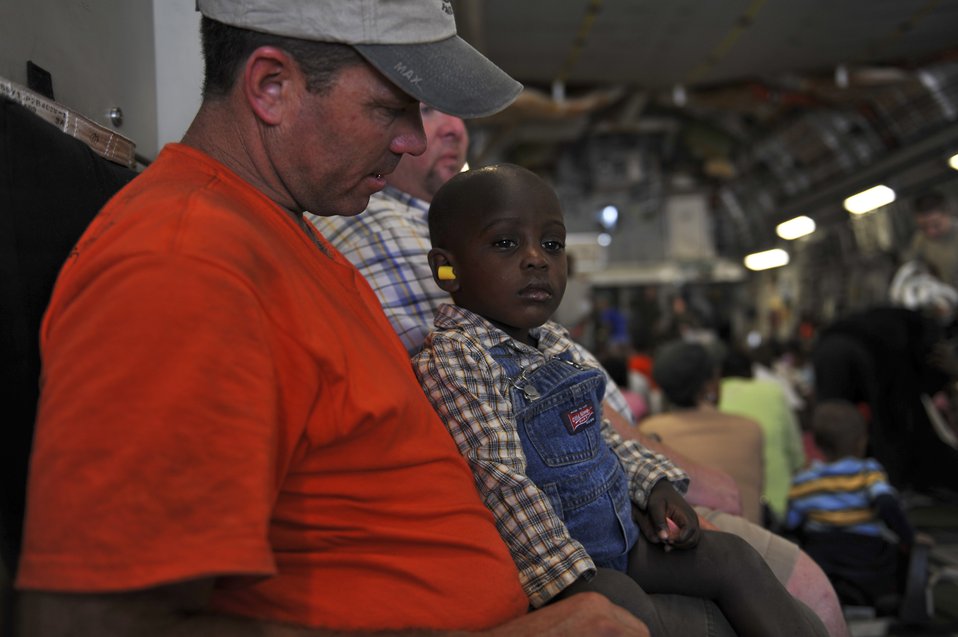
Evacuation

A Haitian boy watches as nearly 200 Haitians board a C-17 Globemaster III at Toussaint L'Ouverture International Airport in Port-au-Prince, Haiti, Jan. 23, 2010. Aircraft from all over the world are flying into the airport to drop off humanitarian aid and transport people out of the country in the aftermath of the devastating earthquake Jan. 12.